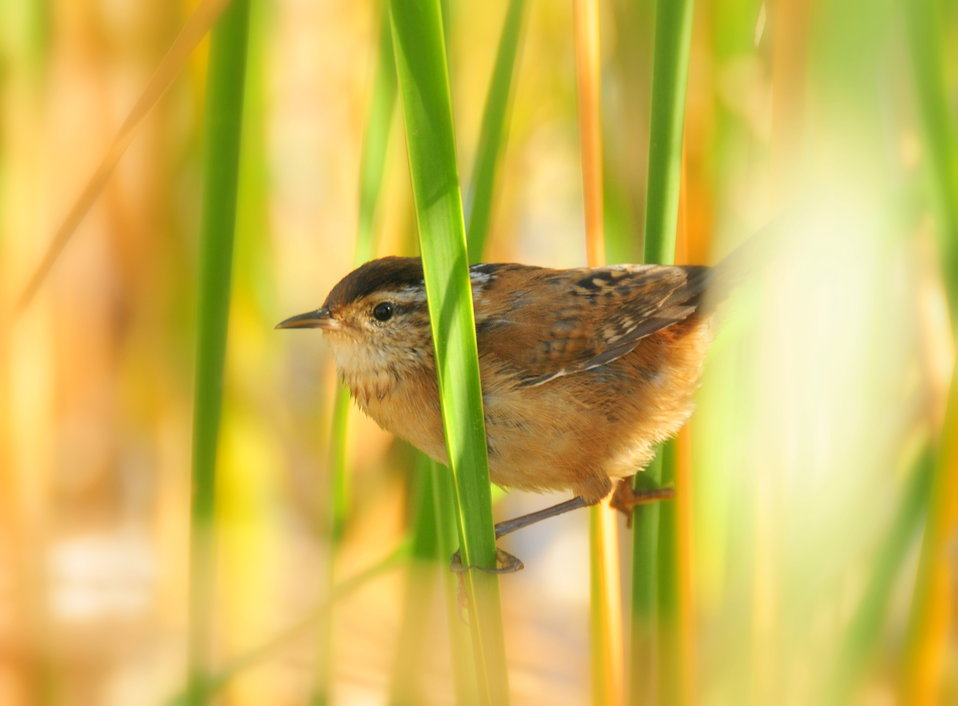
Marsh Wren Sand Lake WMD

A marsh wren in the Sand Lake Wetland Management District, stops long enough for a quick photo.